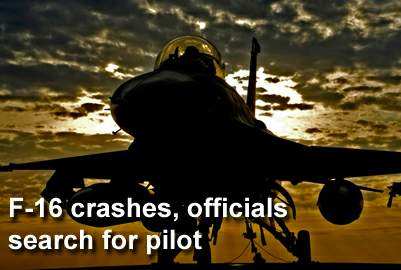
F-16 crashes, search for pilot ongoing

An F-16 Fighting Falcon crashed over the Utah Test and Training Range around 10:25 p.m. June 22, and Hill Air Force Base emergency responders are conducting a search for the pilot.